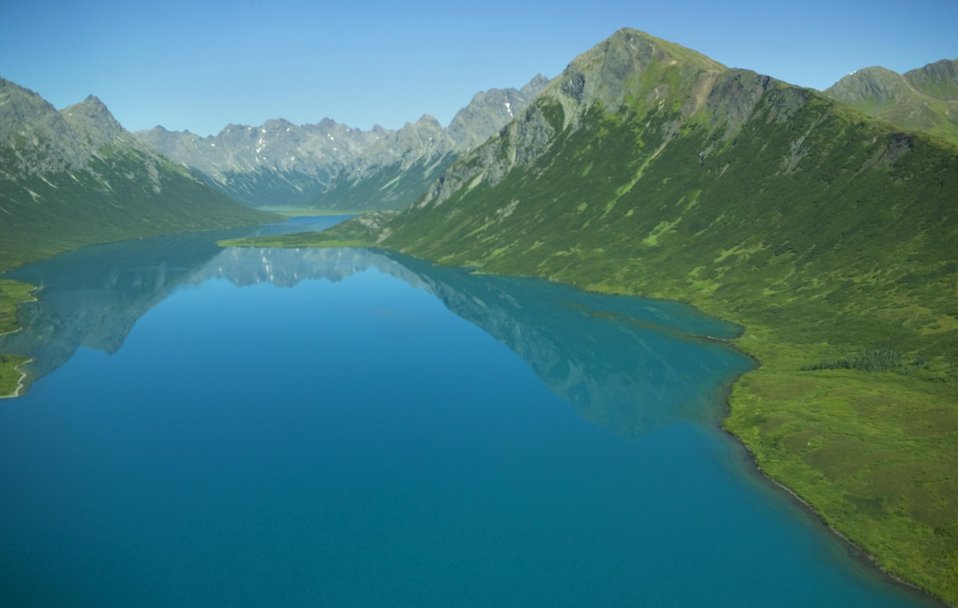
Togiak Nation Wildlife Refuge